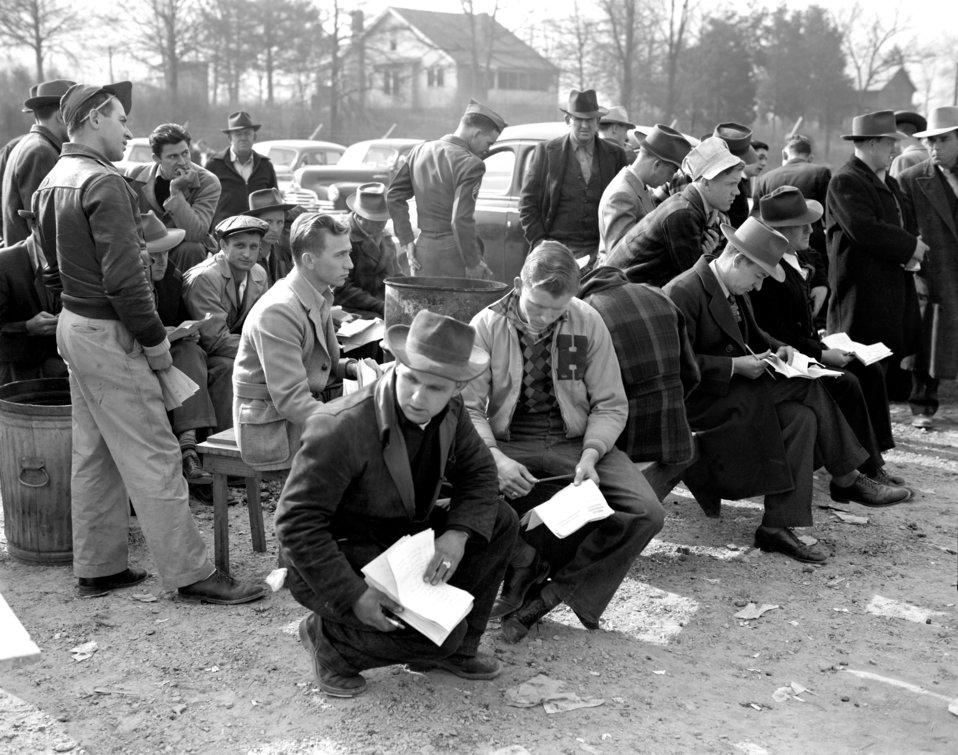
W.A.A. Auto Sale Oak Ridge 1947

3304-5b DOE photo Ed Westcott 2-18-1947 War Assets Administration Exclusive Sale for Vet of WW II Automotive Vehicles at Elza Gate Oak Ridge Tennessee